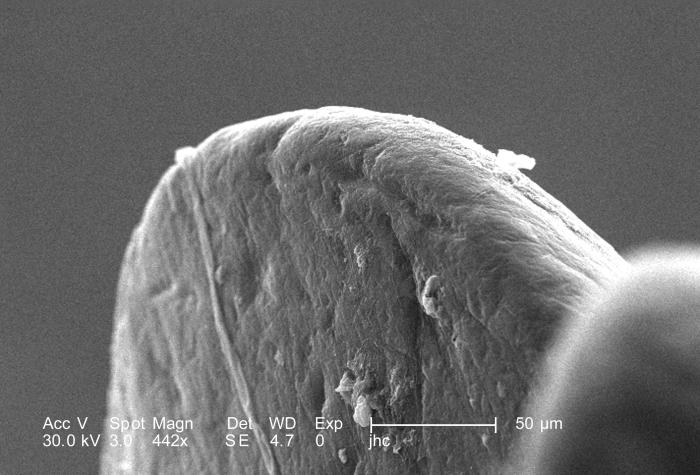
Under a moderate magnification of 442X, approximately 8X greater than PHIL 10057, this scanning electron micrograph (SEM) depicted some of the exoskeletal morphologic characteristics displayed on the head region of an unidentified beetle found deceased in the suburbs of Decatur, Georgia. In this particular view, one of the mandibular protuberance tips, seen in 10052, was enlarged, revealing the structure's textured surface.